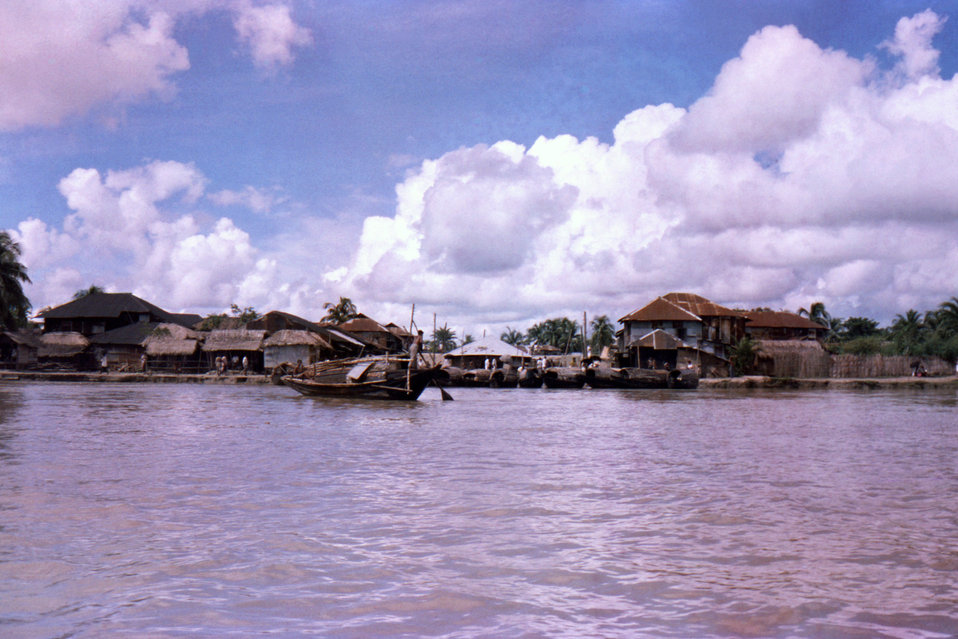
This photograph, which was captured in October, 1975, depicted a view from aboard a boat on the Bay of Bengal, of a typical Patuakhali District village, in the country of Bangladesh. At the time when this image was captured, there were 900 villages in Patuakhali. See PHIL 12341 for another of this coastal village.